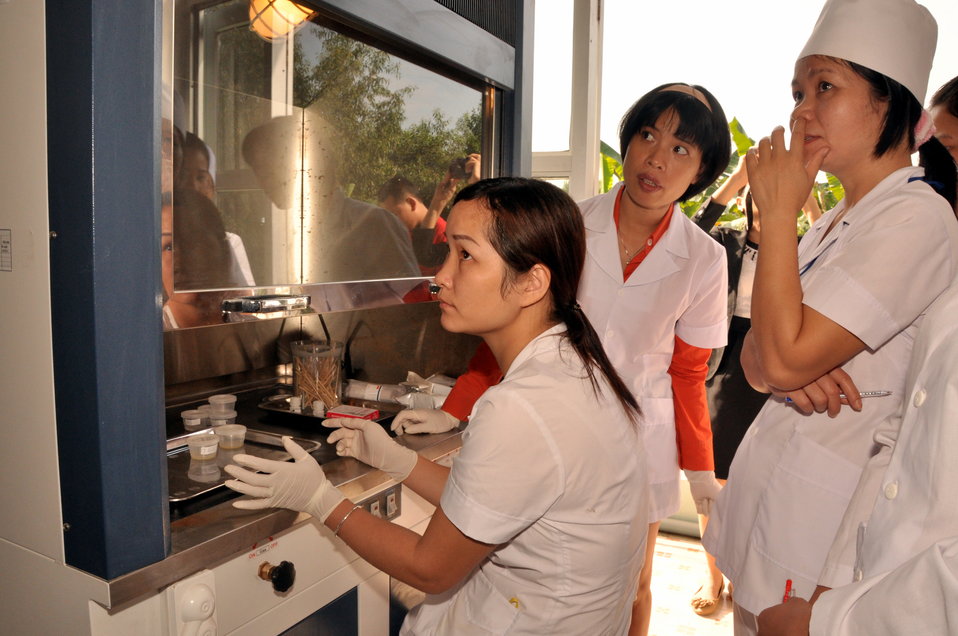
USAID supports new rapid detection TB equipment